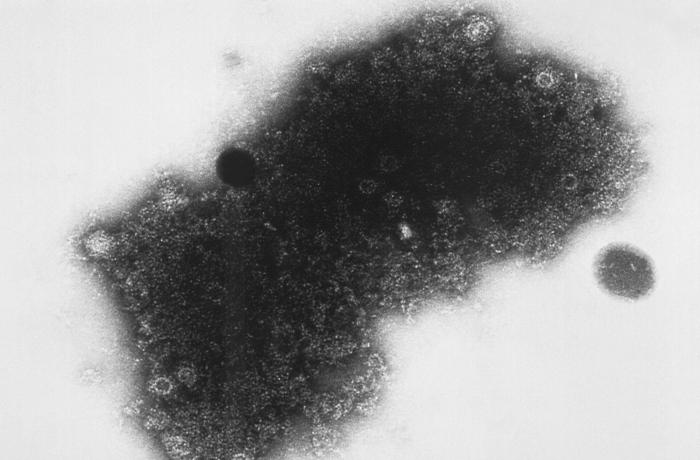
This transmission electron micrograph (TEM) revealed some of the ultrastructural morphology exhibited by a grouping of Enterovirus 70 virions.